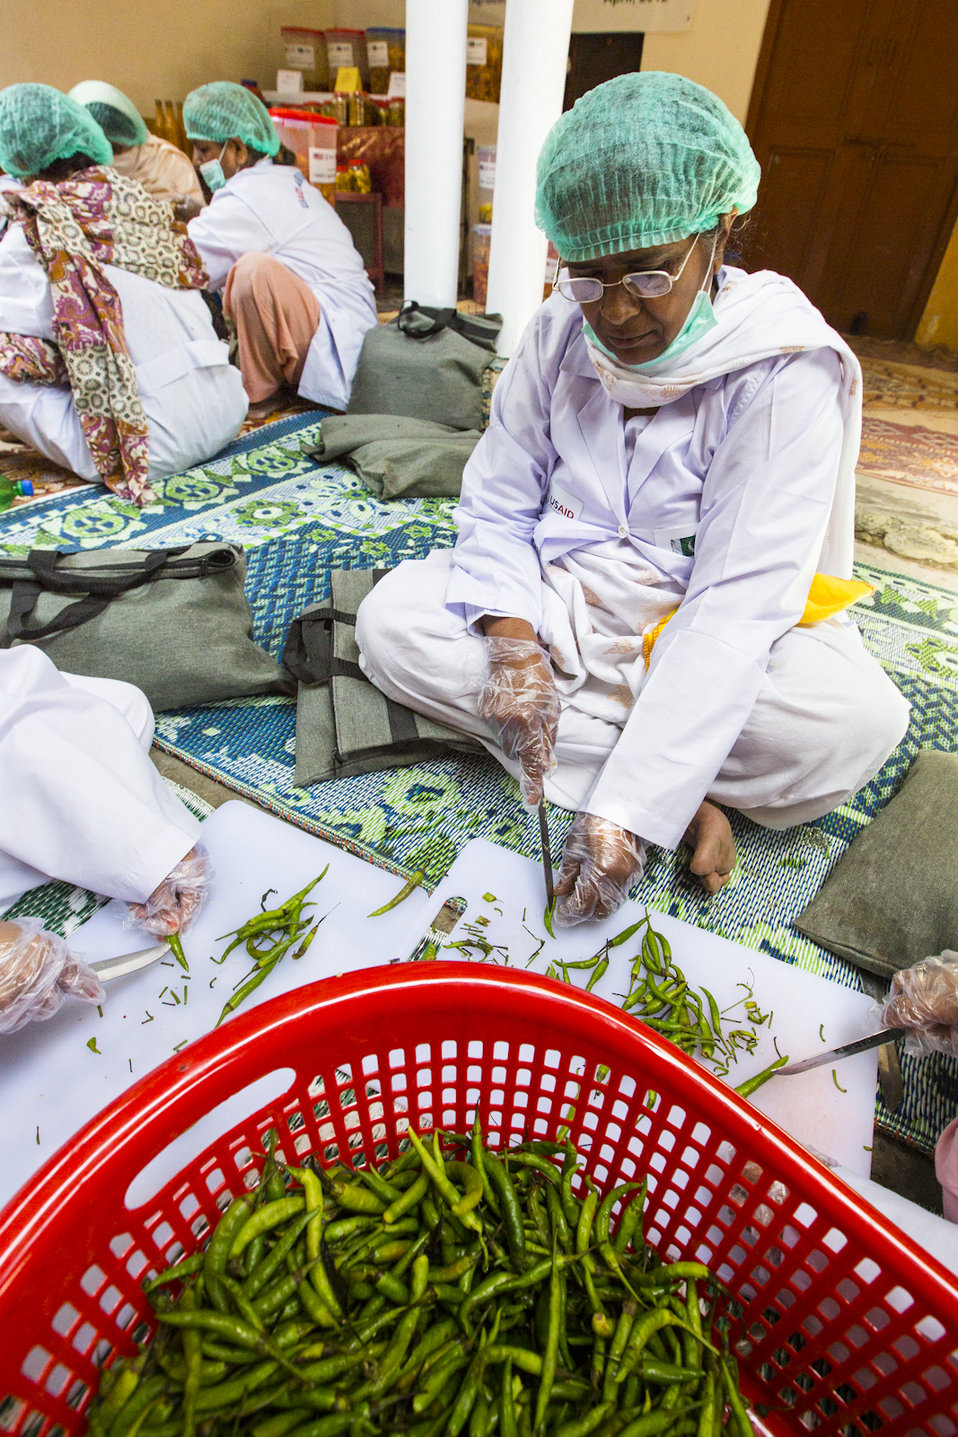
USAID's Agribusiness Project Women FEG for Food Processing - Pickle Production at Village Jabbi

www.usaid.gov/pk/db/sectors/growth/project 750.html